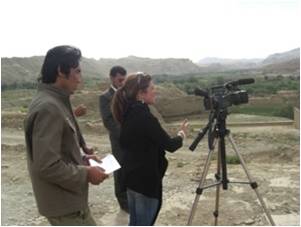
State TV reporters Trained To Make a Documentary